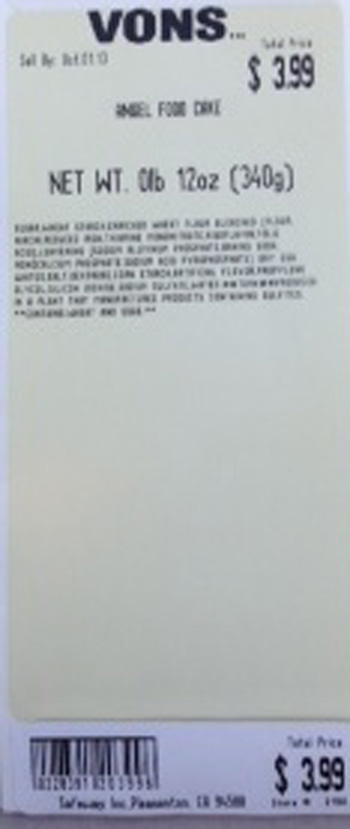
RECALLED – Angel Food Cakes

September 26, 2013 – Product Recall – Safeway Recalls Several Varieties of Angel Food Cake Due to Undeclared Soy and Milk Allergens.